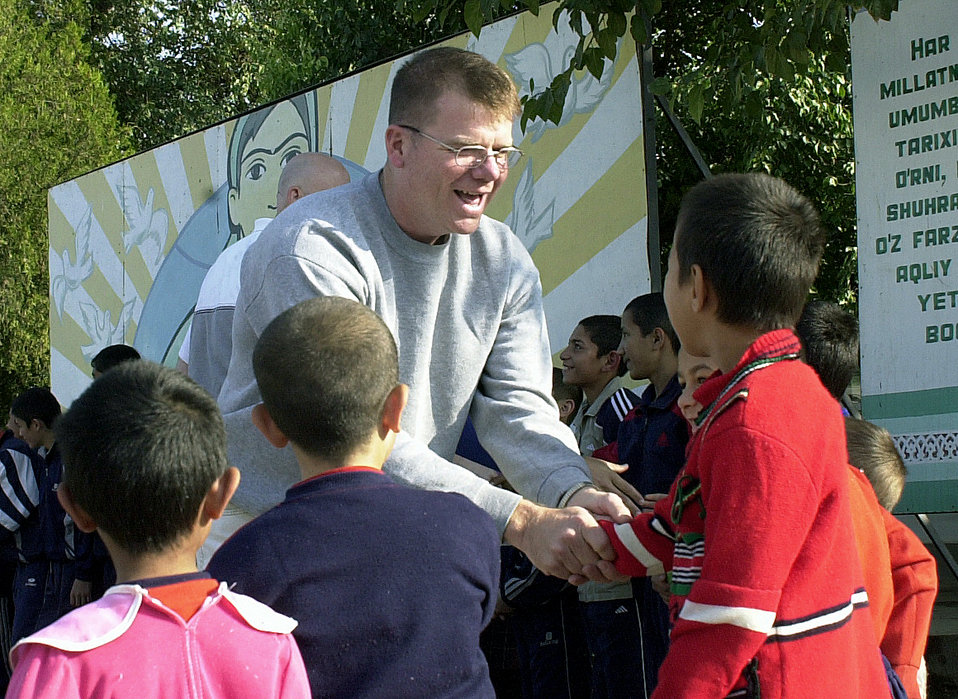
Lending a helping hand in Uzbekistan

KARSHI, Uzbekistan -- Chief Master Sgt. Chuck Nail arrives at a children's home here. Chief Nail was one of a dozen Airmen and Soldiers who visited the school, bringing school supplies, clothes and toys for the children. He is assigned to the 416th Air Expeditionary Group at nearby Karshi-Khanabad.